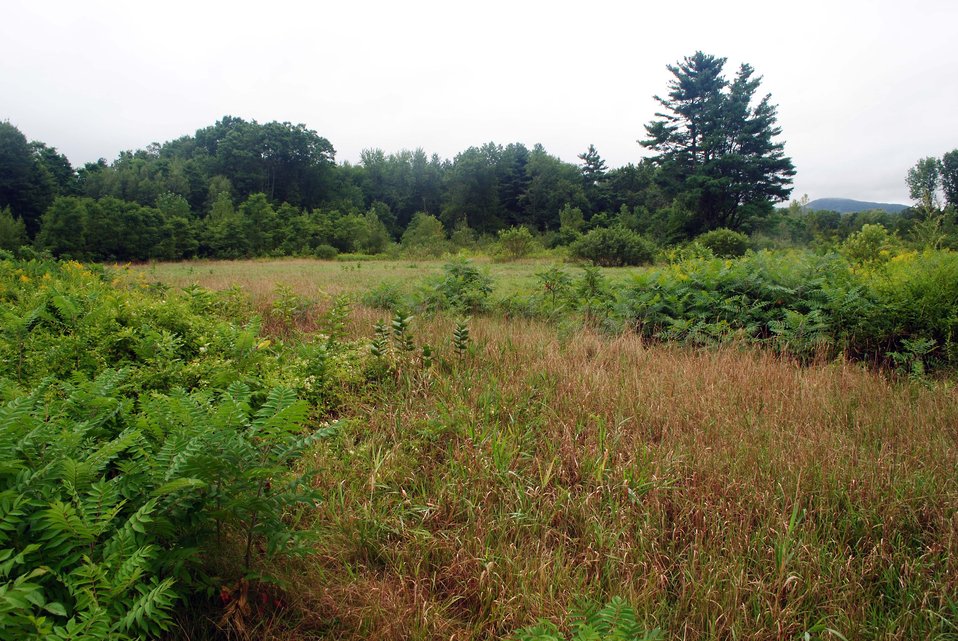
Fort River Division of the Silvio O. Conte National Wildlife Refuge, Hadley, MA.